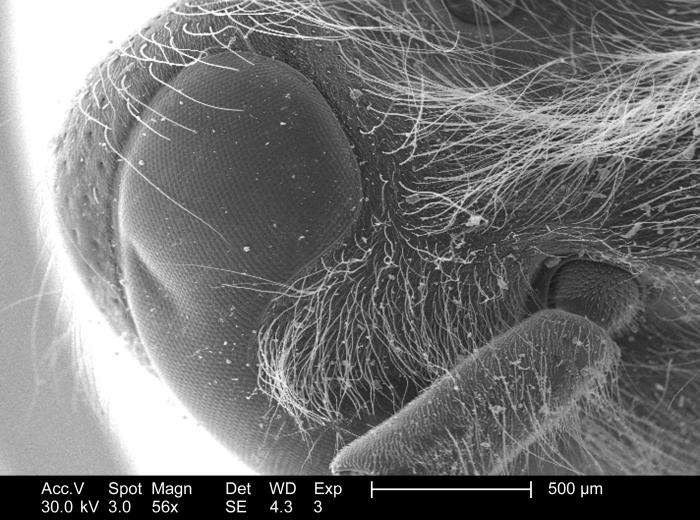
Though magnified only 56x, this 2005 scanning electron micrograph (SEM) depicted the anatomical relationship of the antenna, and the head of this unidentified hymenopteran specimen found deceased on the ground of the Decatur, Georgia suburbs. Next to the antenna on the left, the compound eye is visible with its repeating pattern of ommatidia, which are the small visual units that when working in synchrony, gives the wasp a visual picture of its environment.